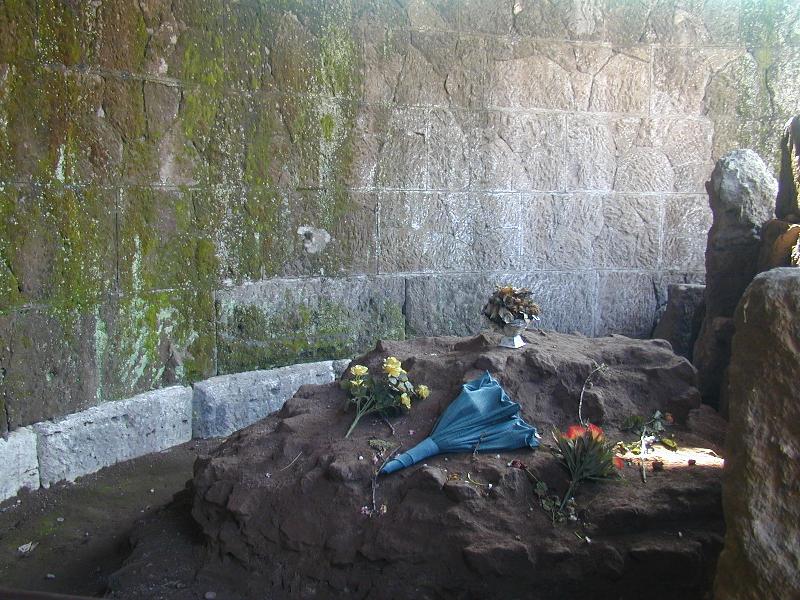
010218 foro ara di Cesare